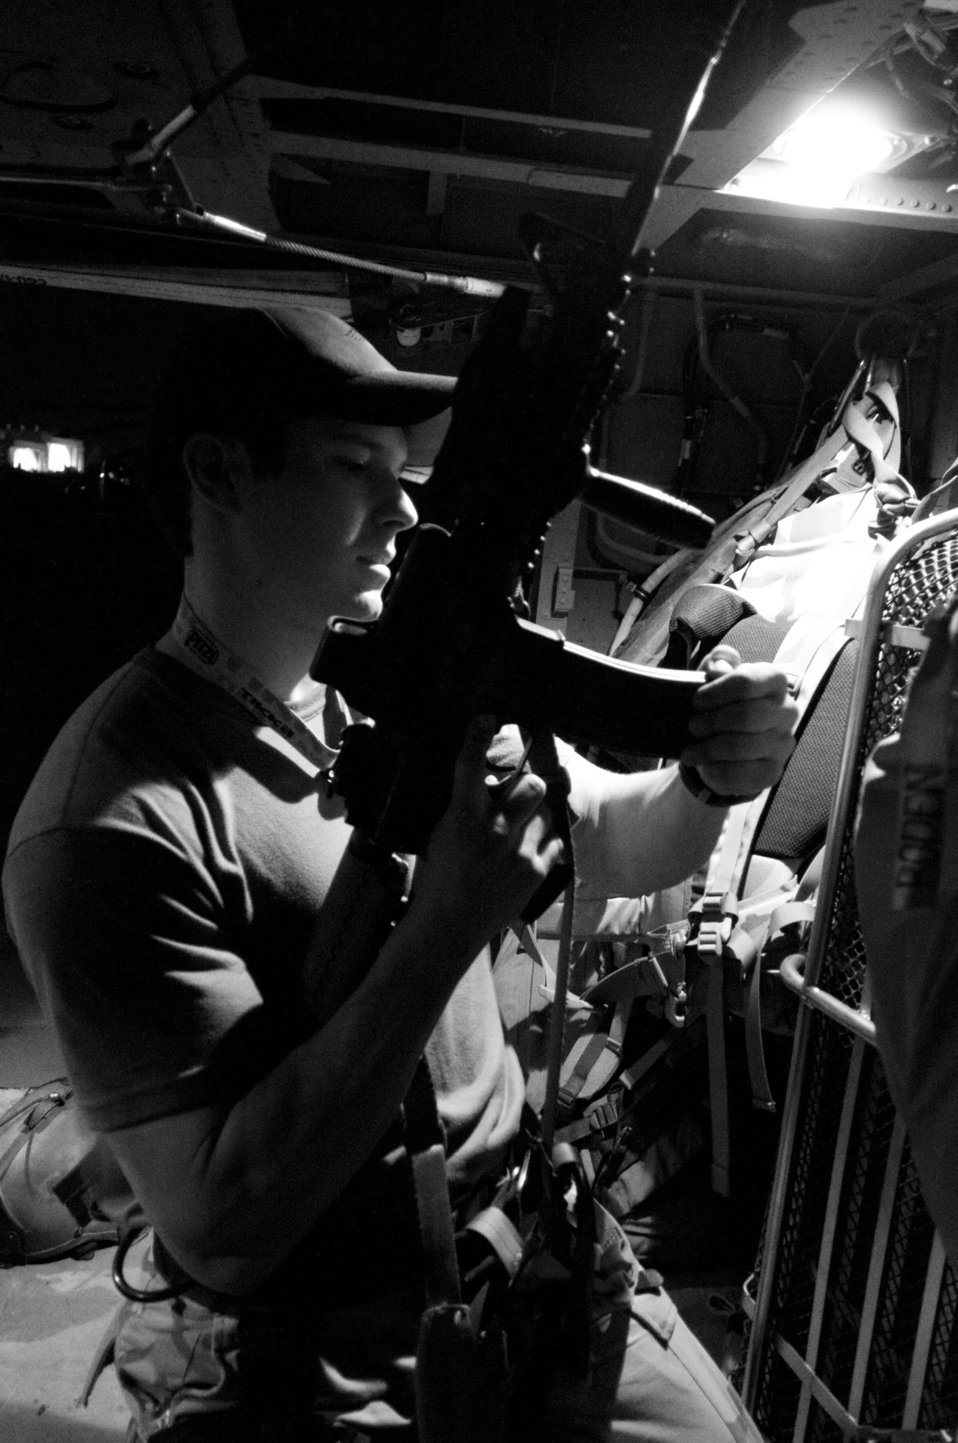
Nighttime operations

Capt. Brock Roden loads his M-4 rifle in an HH-60G Pave Hawk July 17 at Bagram Air Base, Afghanistan. Captain Roden participated in a combat search and rescue exercise that night. Captain Roden is assigned to the of the 33rd Expeditionary Rescue Squadron deployed from Moody Air Force Base, Ga.